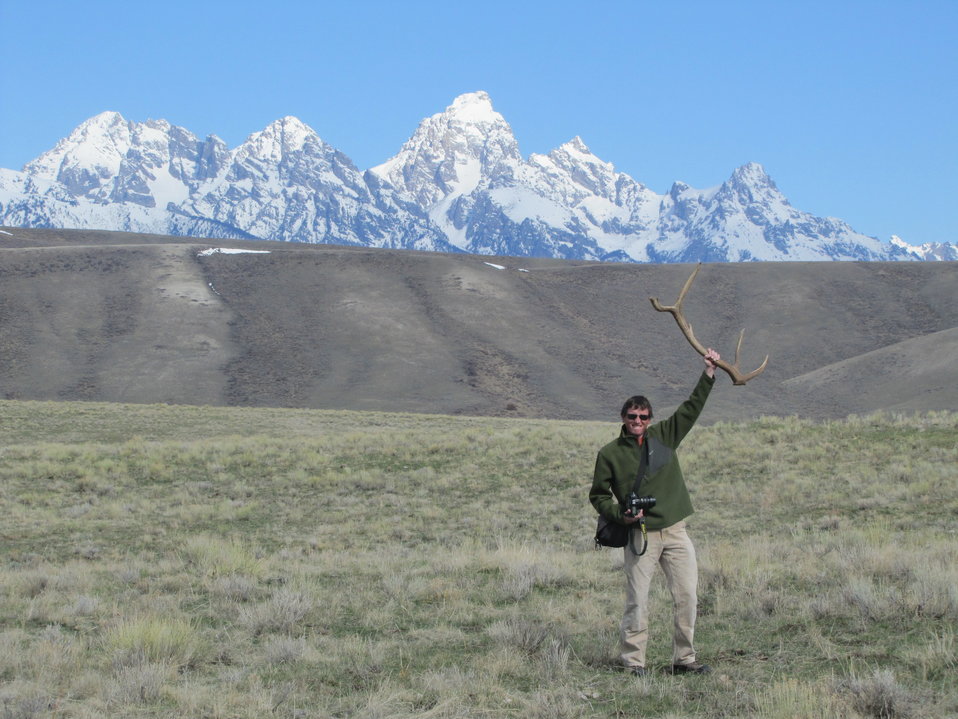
Photographer Beams with Pride

Jackson Hole News & Guide photographer Bradley Boner got in the spirit of the day, finding an antler himself while out photographing a group of Boy Scouts on their annual collection day on the National Elk Refuge.